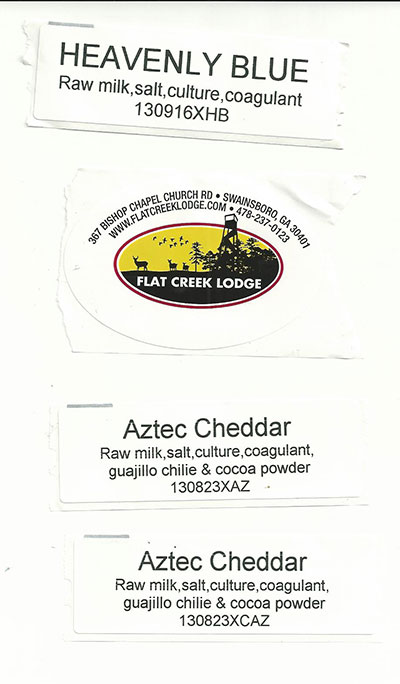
RECALLED – Cheese

December 24, 2013 – Product Recall – Flat Creek Farm & Dairy Recalls Cheese Because of Possible Health Risk.